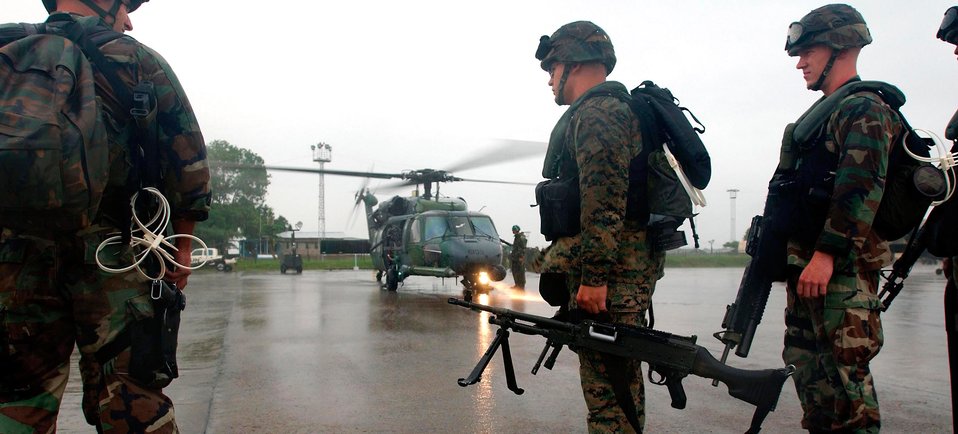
Saddle up

LUNGI, Sierra Leone -- Marines prepare to board an Air Force HH-60G Pave Hawk helicopter here July 21. The Marines are part of an antiterrorism security team augmenting security at the U.S. Embassy in Monrovia, Liberia. The helicopters are deployed form Naval Air Station Keflavik, Iceland, as part of the 398th Air Expeditionary Group. The group provides recovery and emergency evacuation capabilities in Liberia.